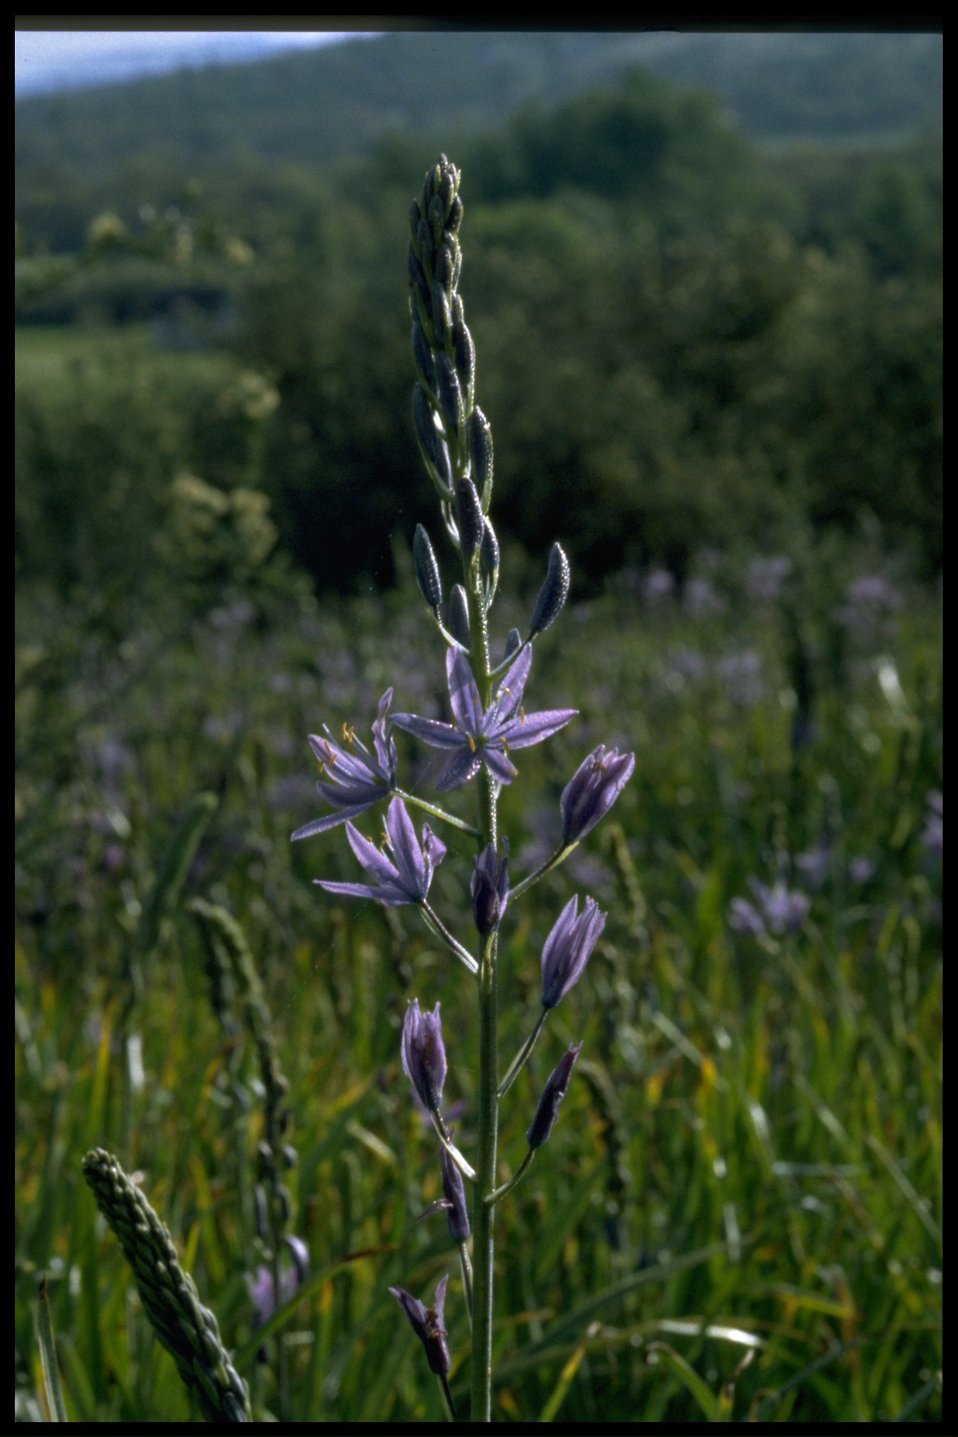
Medium shot of Camassia quamash.